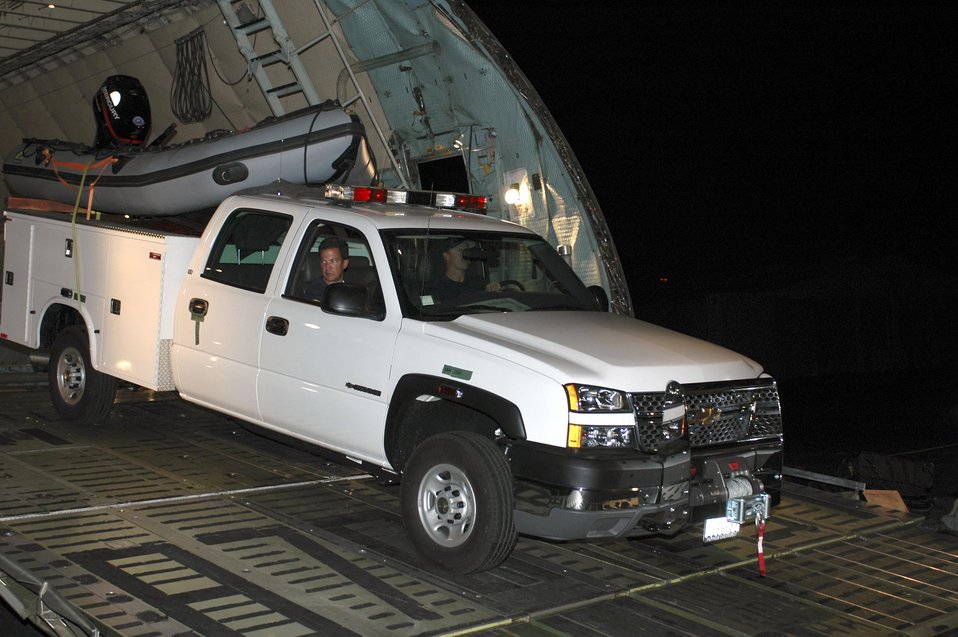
AMC answering humanitarian call in aftermath of Katrina

LAFAYETTE, La. -- Members of the California Governor's Office of Emergency Services Special Operation Urban Search and Rescue team unload emergency equipment here from a C-5 Galaxy from Travis Air Force Base, Calif., on Aug. 30. The vehicle will be used for Hurricane Katrina relief operations in Mississippi and Louisiana.